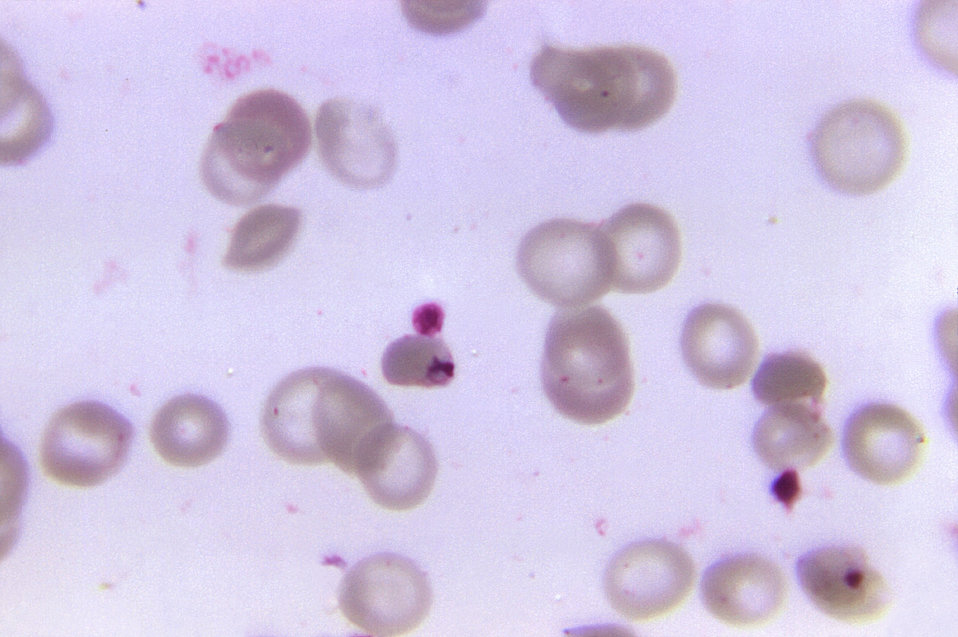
This photomicrograph revealed some of the ultrastructural morphology exhibited by a ring-form, Plasmodium falciparum malarial parasite, which was found in a blood sample from a patient who had just begun therapeutic treatment with an unknown agent.